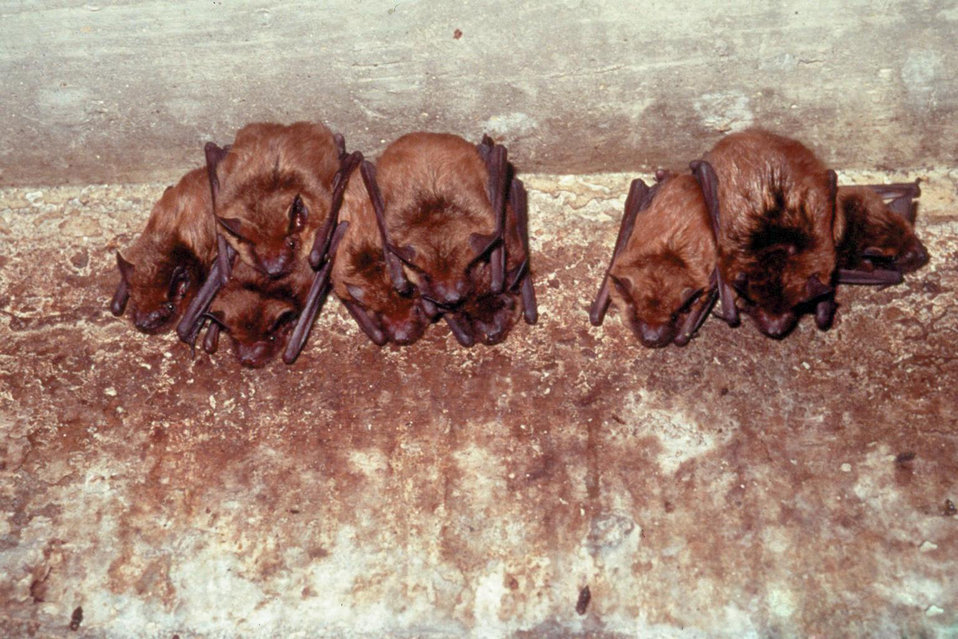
Big brown bat rest on a cave wall. Bats are one of nature’s many pollinators for flowers and crops and are crucial in production for fruits and vegetables.